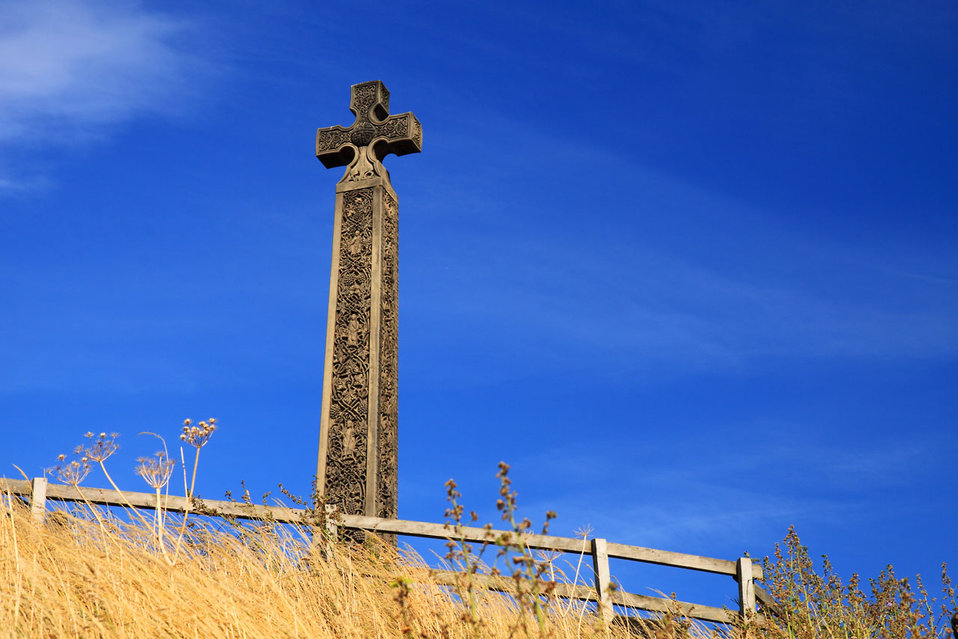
Old celtic cross

Old wooden celtic cross.